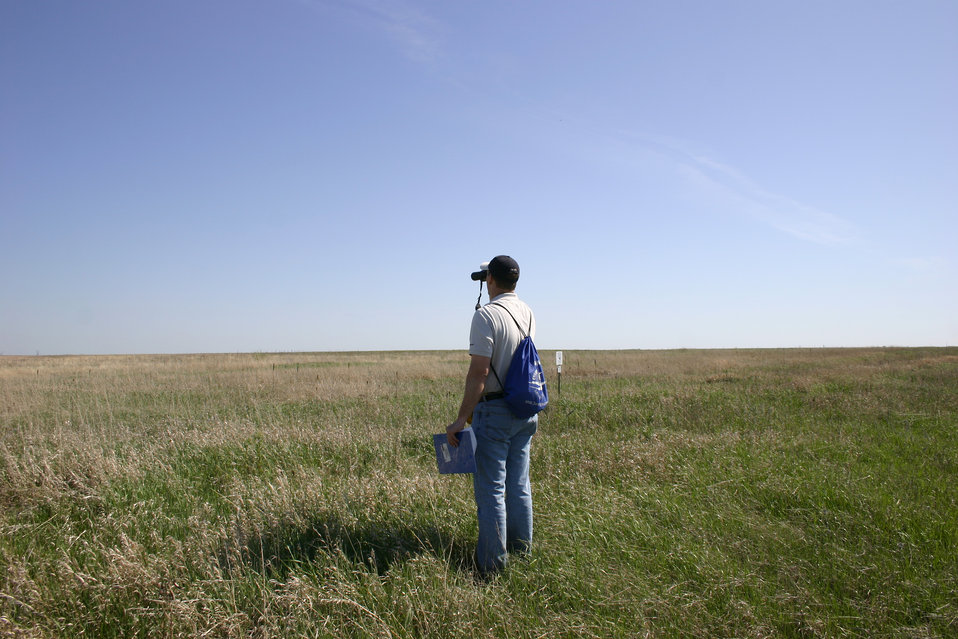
Each year, volunteers gather at Glacial Ridge in Minnesota to look for unique wetland birds for the Shorebird Blitz.